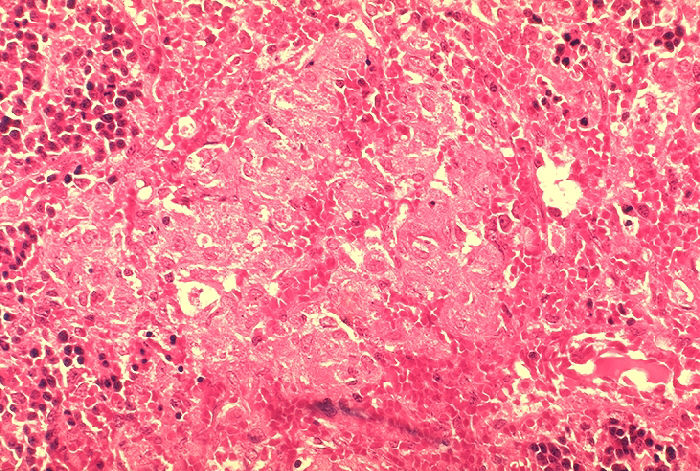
Histopathology of guinea pig spleen in experimental Brucella suis infection.